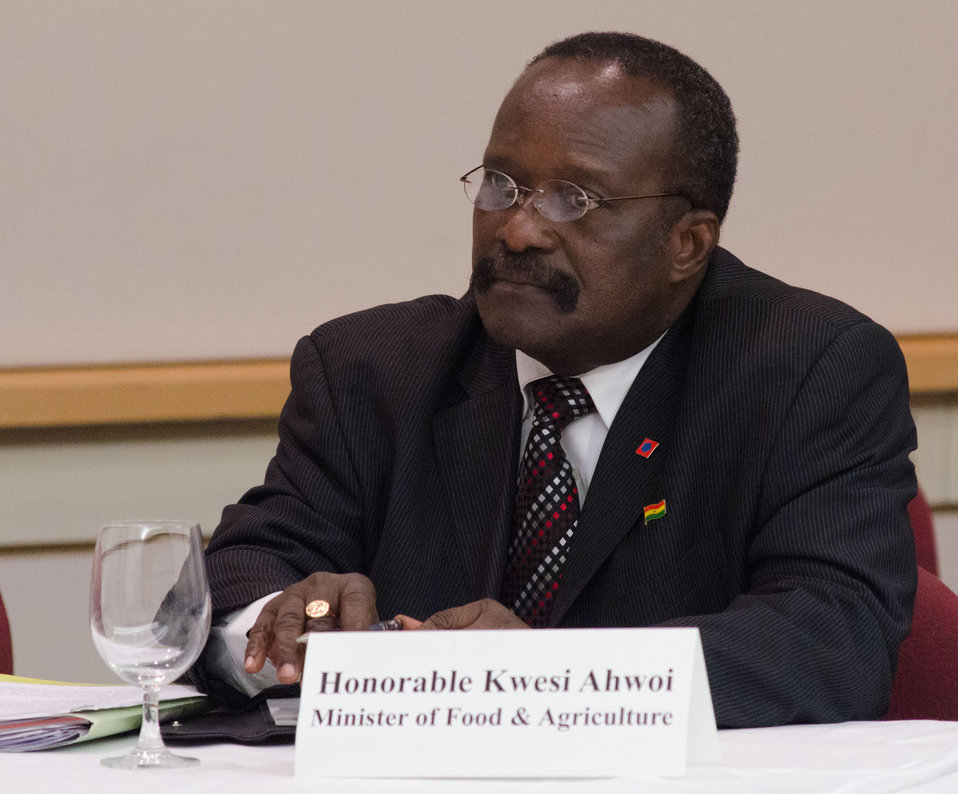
Tanzania, Minister of Food and Agriculture the Honorable Kwesi Ahwoi makes remarks at the African Heads of State conference at the Ronald Reagan Federal Building in Washington, D.C., on Friday, May 18, 2012.